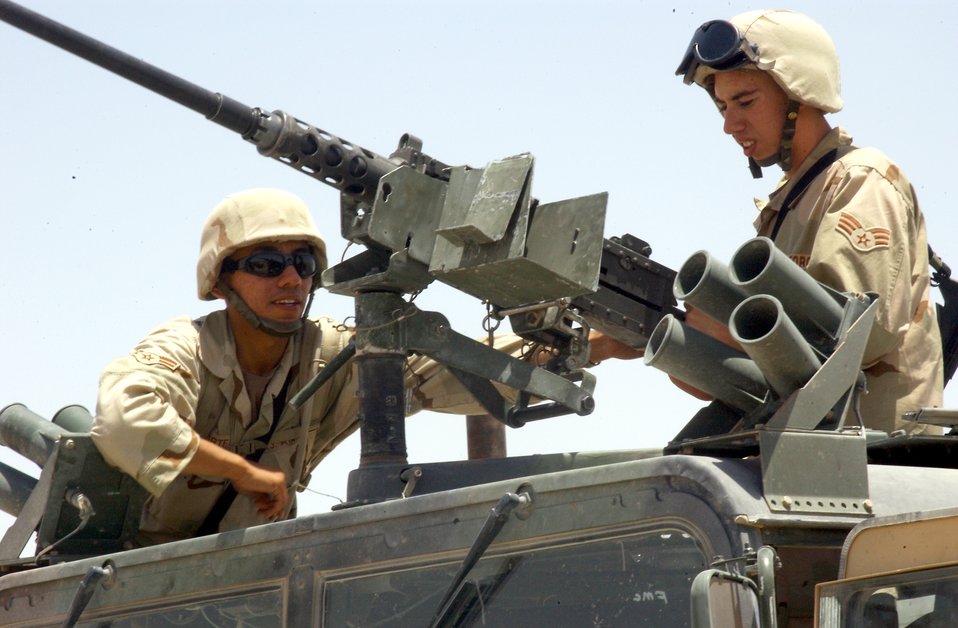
Next group of Airman-Soldiers set to move into Iraq

SOUTHWEST ASIA -- Airman 1st Class Gurtavo Corte (left) and Senior Airman Douglas Thompson inspect their .50-caliber machine gun mounted on a Humvee during a live-fire training exercise July 13. More than 150 Airmen completed the final stages of live-fire convoy training at Balad Air Base, Iraq, on July 16 before deploying north to Mosul as part of the 494th Air Expeditionary Force Truck Company.